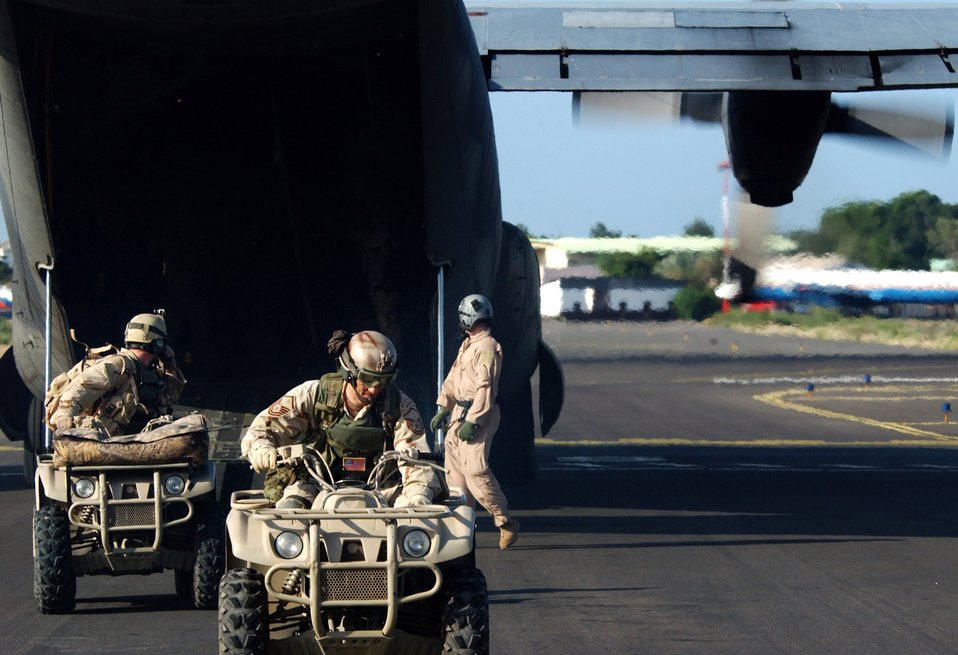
Patient rescue exercise

CAMP LEMONIER, DJIBOUTI, Africa (AFPN) -- Air Force pararescuemen off load quads off a C-130 Hercules during a simulated patient rescue exercise here Feb. 12.